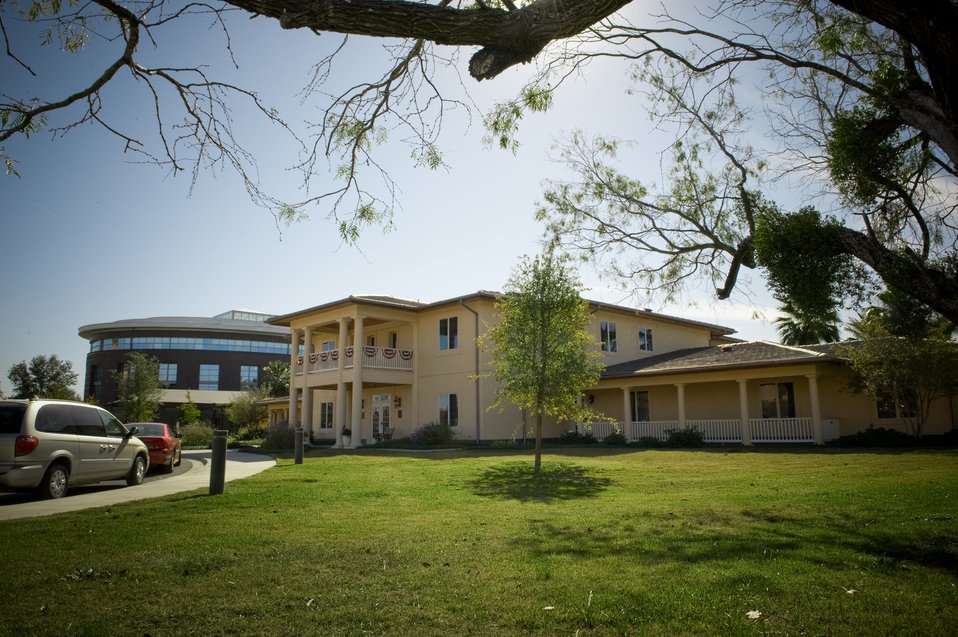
AF Spouse Raises Half a Million for Fisher House

One of the two newest Fisher Houses in San Antonio on Nov. 25. Each of these 16,800 square foot Fisher Houses can accommodate up to 42 families visiting their injured love ones. Private donations were used to fund their construction, operation and maintenance.